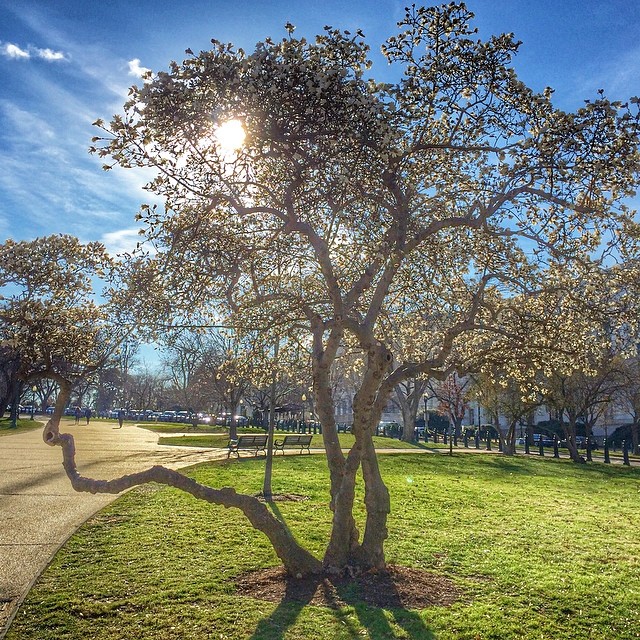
Welcome to April in #DC.